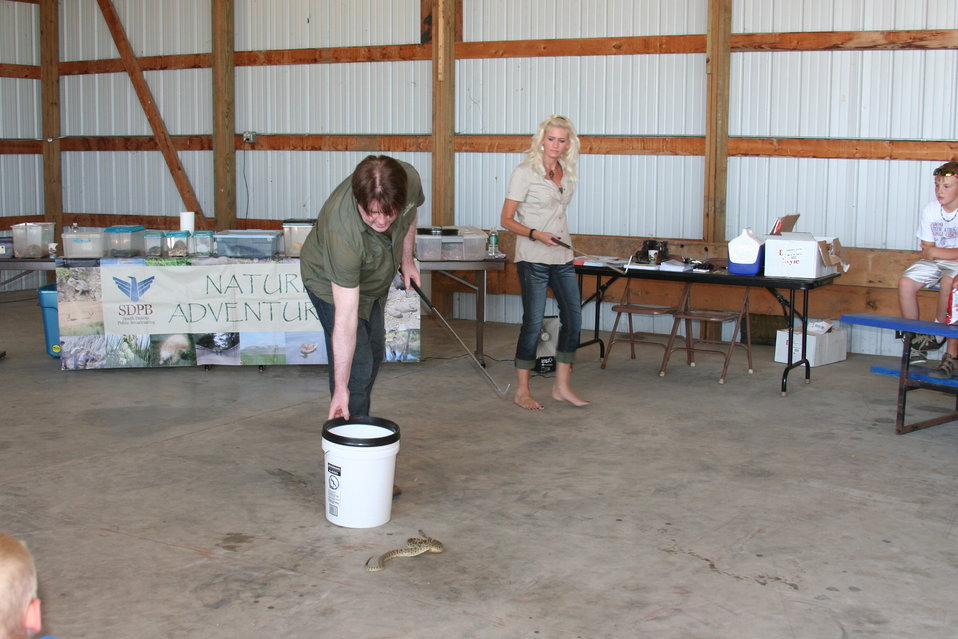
2011 Huron Prairie Fest